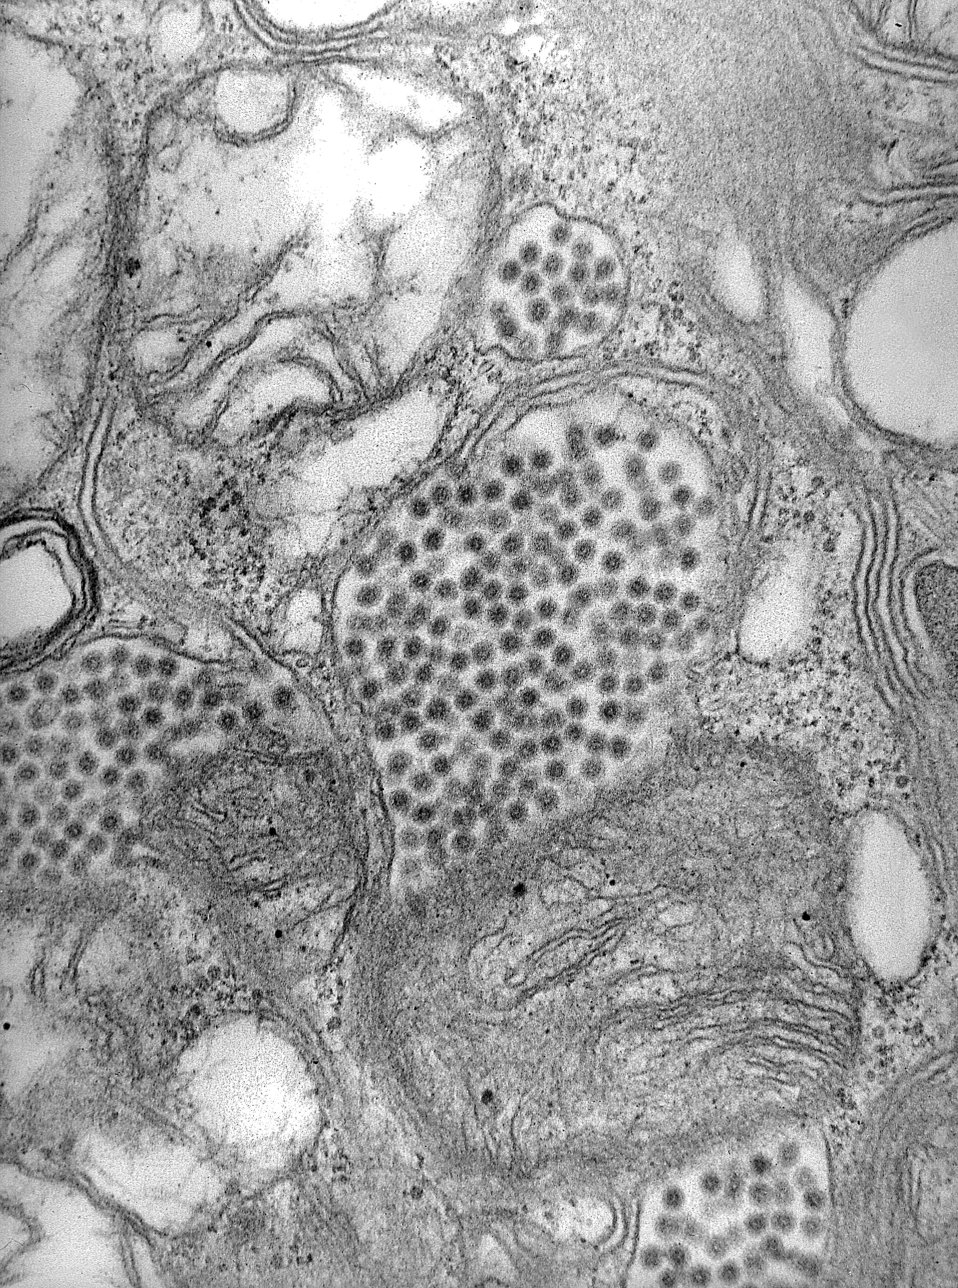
Electron micrograph of the Eastern Equine Encephalitis virus.